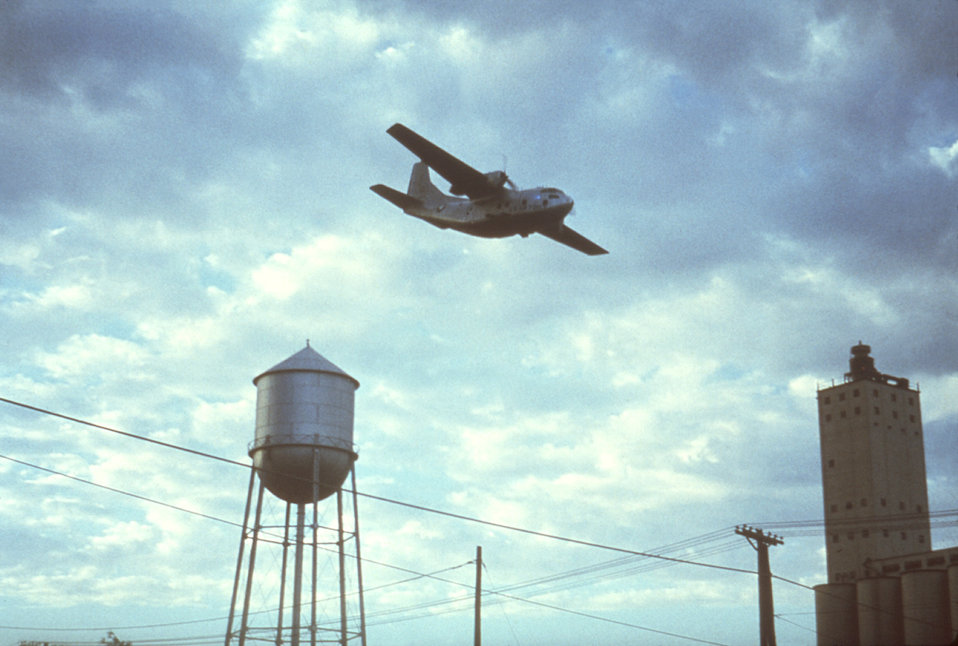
This 1981 photograph depicts a C-123 USAF aircraft dispersing an insecticidal spray over Plainview, Texas in order to combat a troublesome insect population.